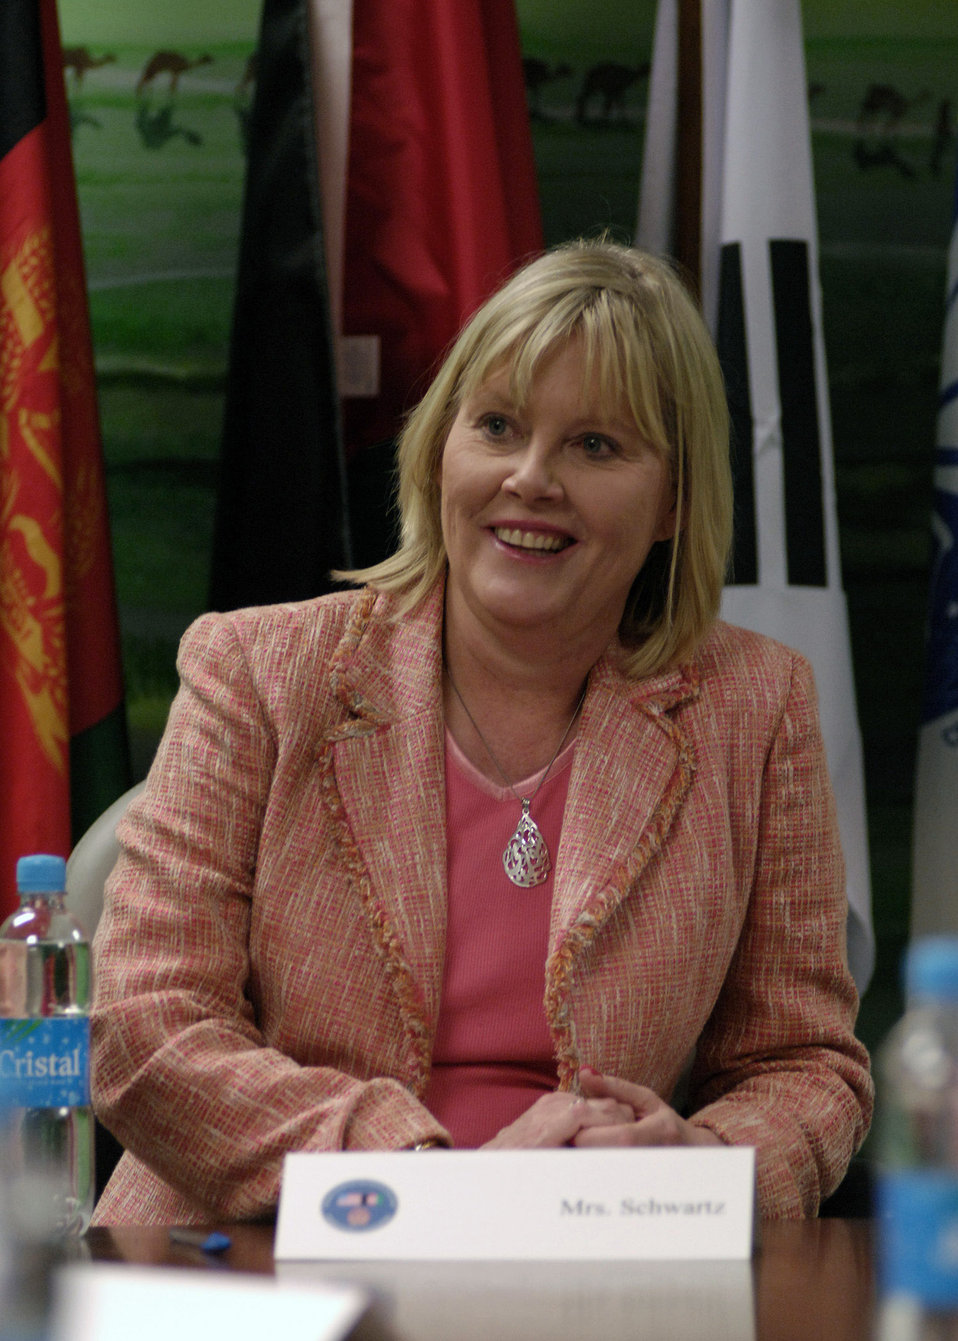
Bagram PRT host women's affair meeting

Suzie Schwartz listens to a story during a women's affairs seminar at Bagram Air Base, Afghanistan, recently. Mrs. Schwartz is the wife of Gen. Norton Schwartz, U.S. Transportation Command commander.